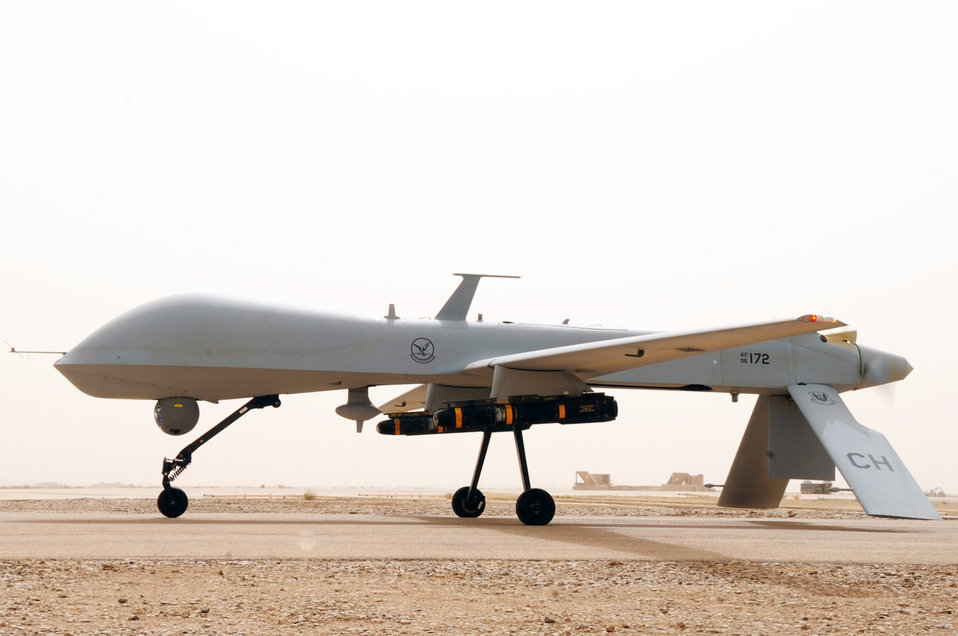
Nov. 16 airpower summary: Predator provides armed reconnaissance

An MQ-1 Predator prepares for takeoff in support of Operation Iraqi Freedom. The Predator provides integrated and synchronized close-air combat operations, to include intelligence, surveillance and reconnaissance.